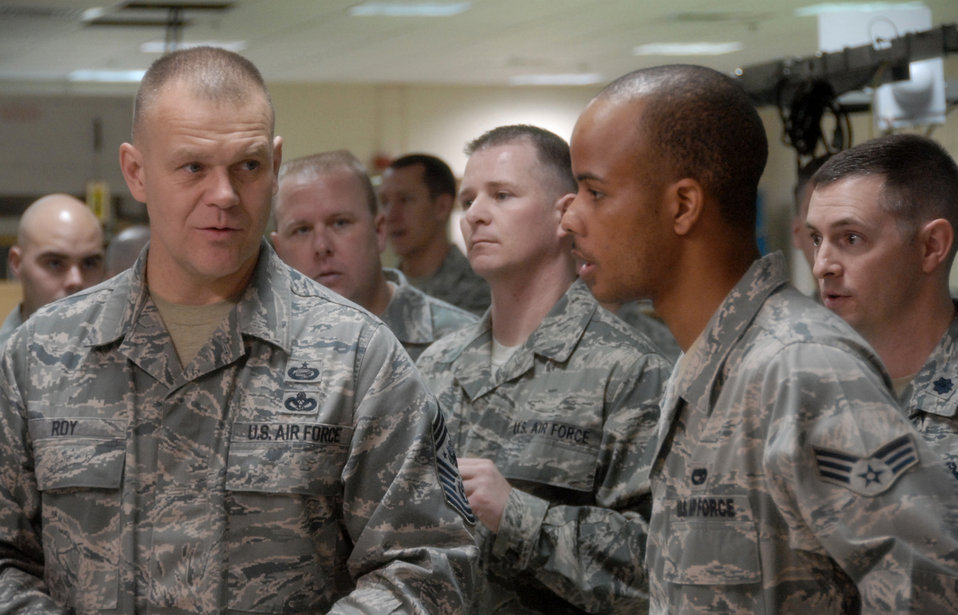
Top enlisted leader address top issues facing Airmen

Chief Master Sgt. of the Air Force James A. Roy (left) asks Senior Airman Dussie Poole a question about electronic warfare pods March 18, 2010, at Eglin Air Force Base, Fla. Chief Roy's two-day visit to the base included tours of units within the various wings and speaking with junior enlisted and senior leadership on Air Force issues. Airman Poole is assigned to the 16th Electronic Warfare Squadron.